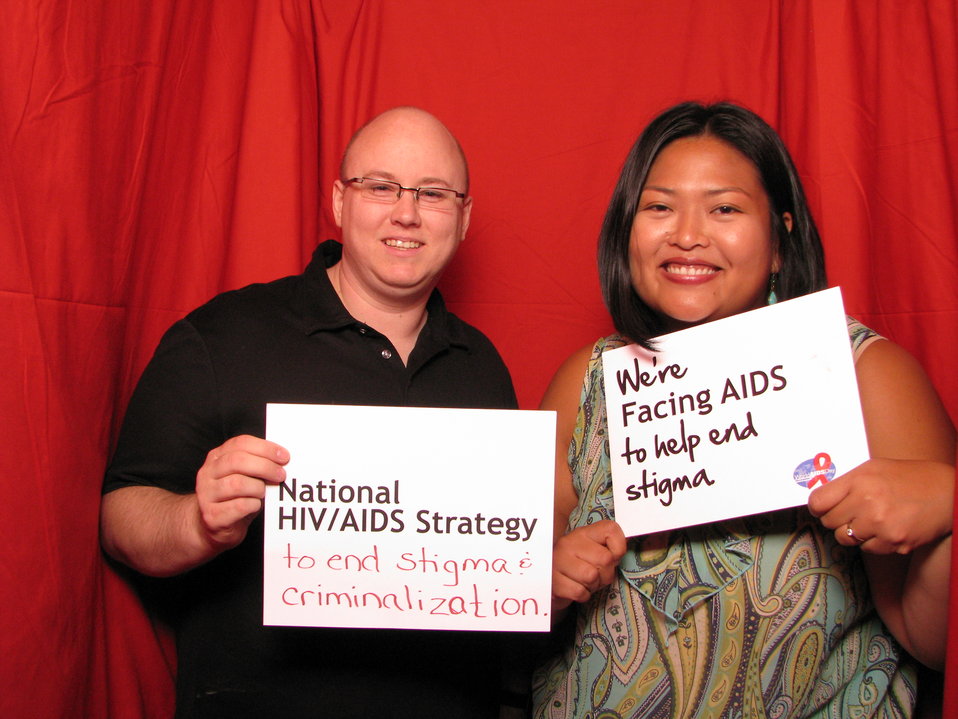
We're FACING AIDS to help end stigma. National HIV/AIDS Strategy to end stigma and criminalization.

From the AIDS.gov photo booth at the U.S. Conference on AIDS, September 2010 (Orlando, FL).